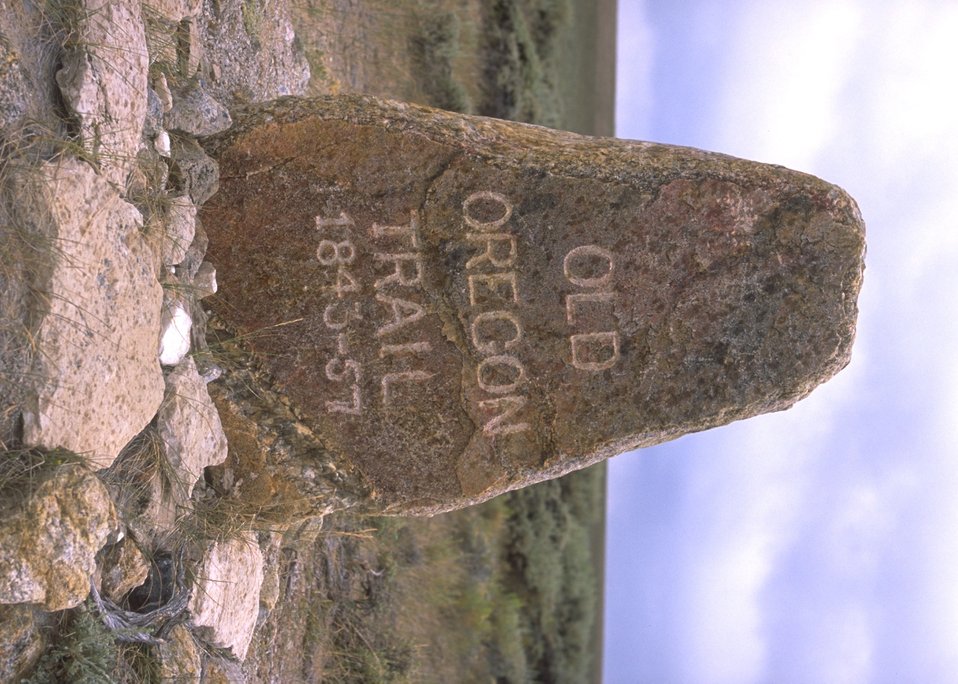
Oregon Trail marker near South Pass, Rock Springs Field Office.